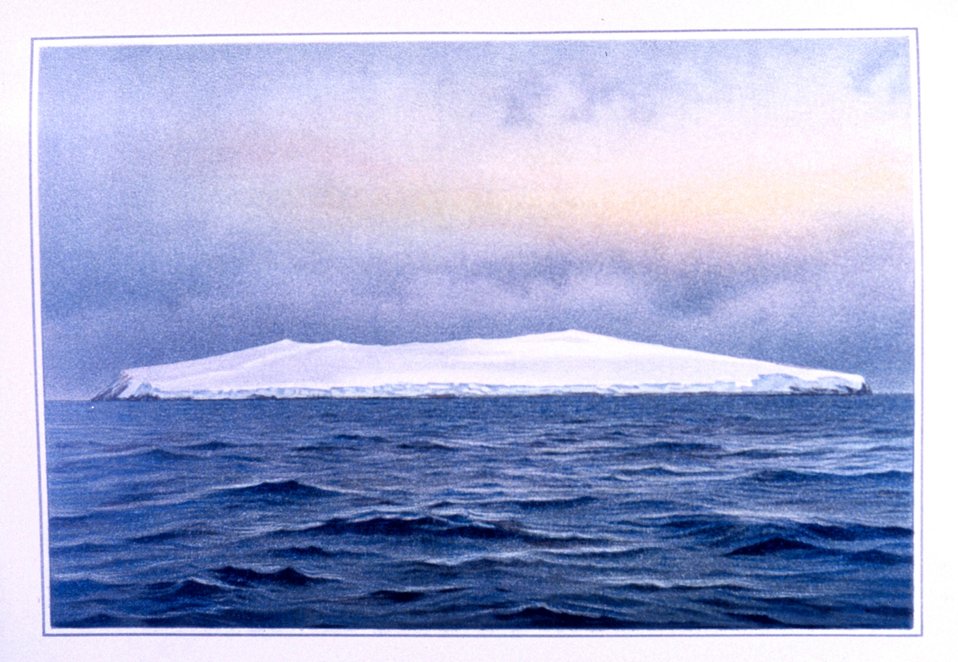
Bouvet Island, southeast side, as seen at sunrise, eight miles distant, November 26, 1898. Water color by F. Winter. P. 191. In: 'Aus den Tiefen des Weltmeeres' by Carl Chun, 1903. Call No. Q115.V15 1903.